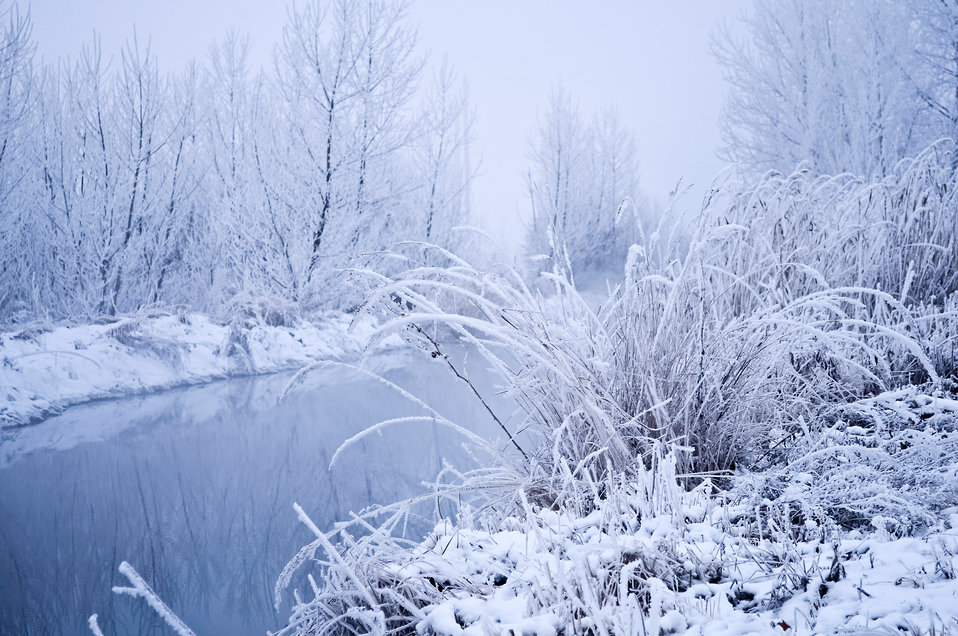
Winter is a great

Snowy winter, all in a fog and snow..